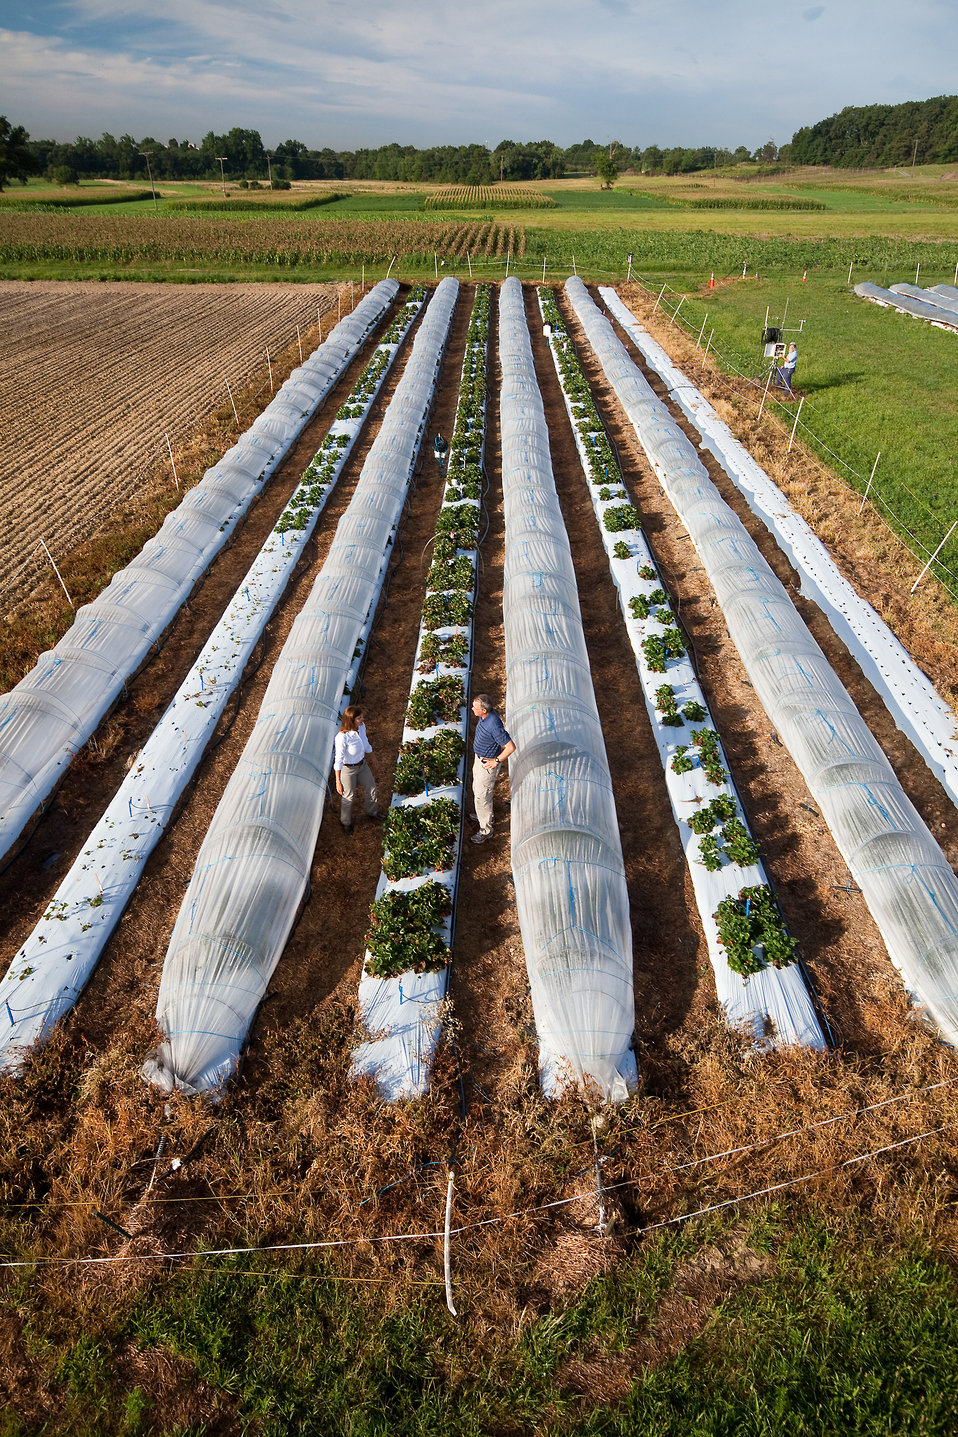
These low tunnels extend the strawberry growing season and allow U.S. Department of Agriculture (USDA) Agricultural Research Service (ARS) scientists to develop cultivars that produce fruit over several months on July 26, 2012.